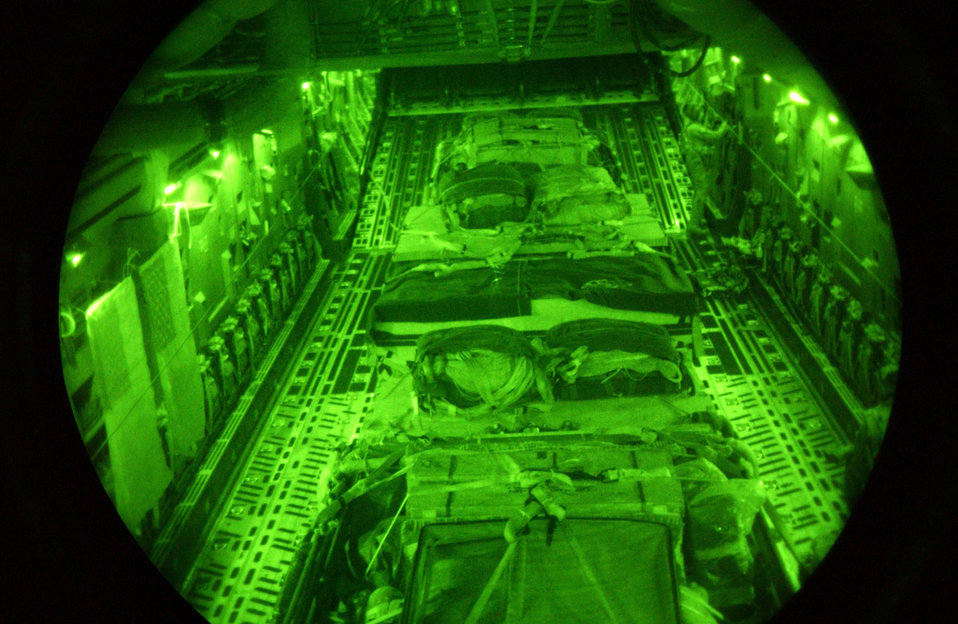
Night air drop

OPERATION IRAQI FREEDOM -- The lead aircraft and its crew in a formation of C-17 Globemaster IIIs air drop vehicles and weapon systems into northern Iraq. This is the first time the C-17 and its aircrews have preformed a heavy drop into a combat zone bringing war fighting capability to forward-deployed Army troops.